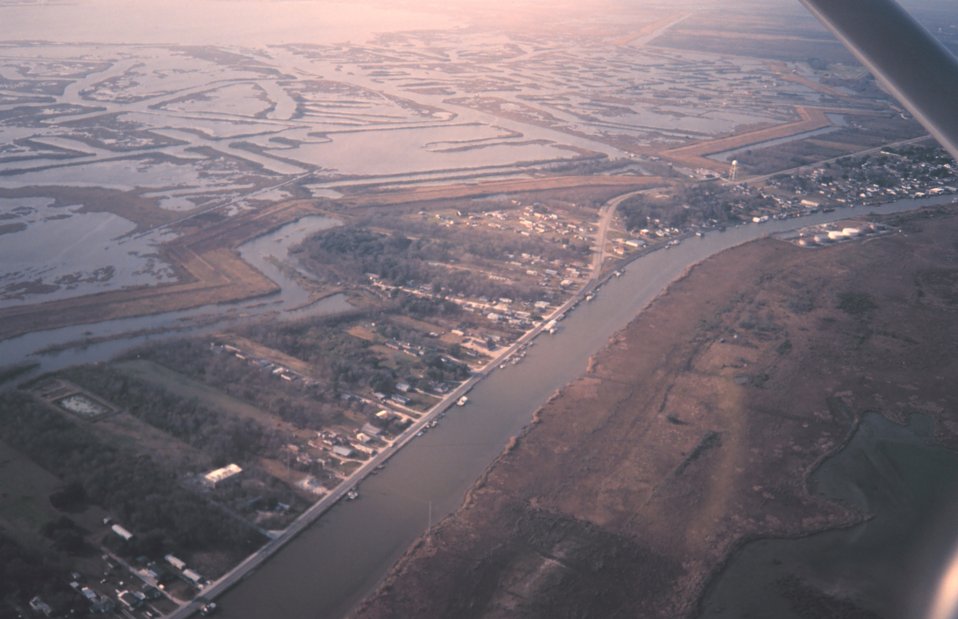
Bayou Lafourche was the main channel of the Mississippi River a few thousand years ago. As river bed fills, the river changes course seeking a steeper slope to the sea. If allowed to follow its natural cycle, the Mississippi River would be in the process of changing its course into the bed of the Atchafalaya River.